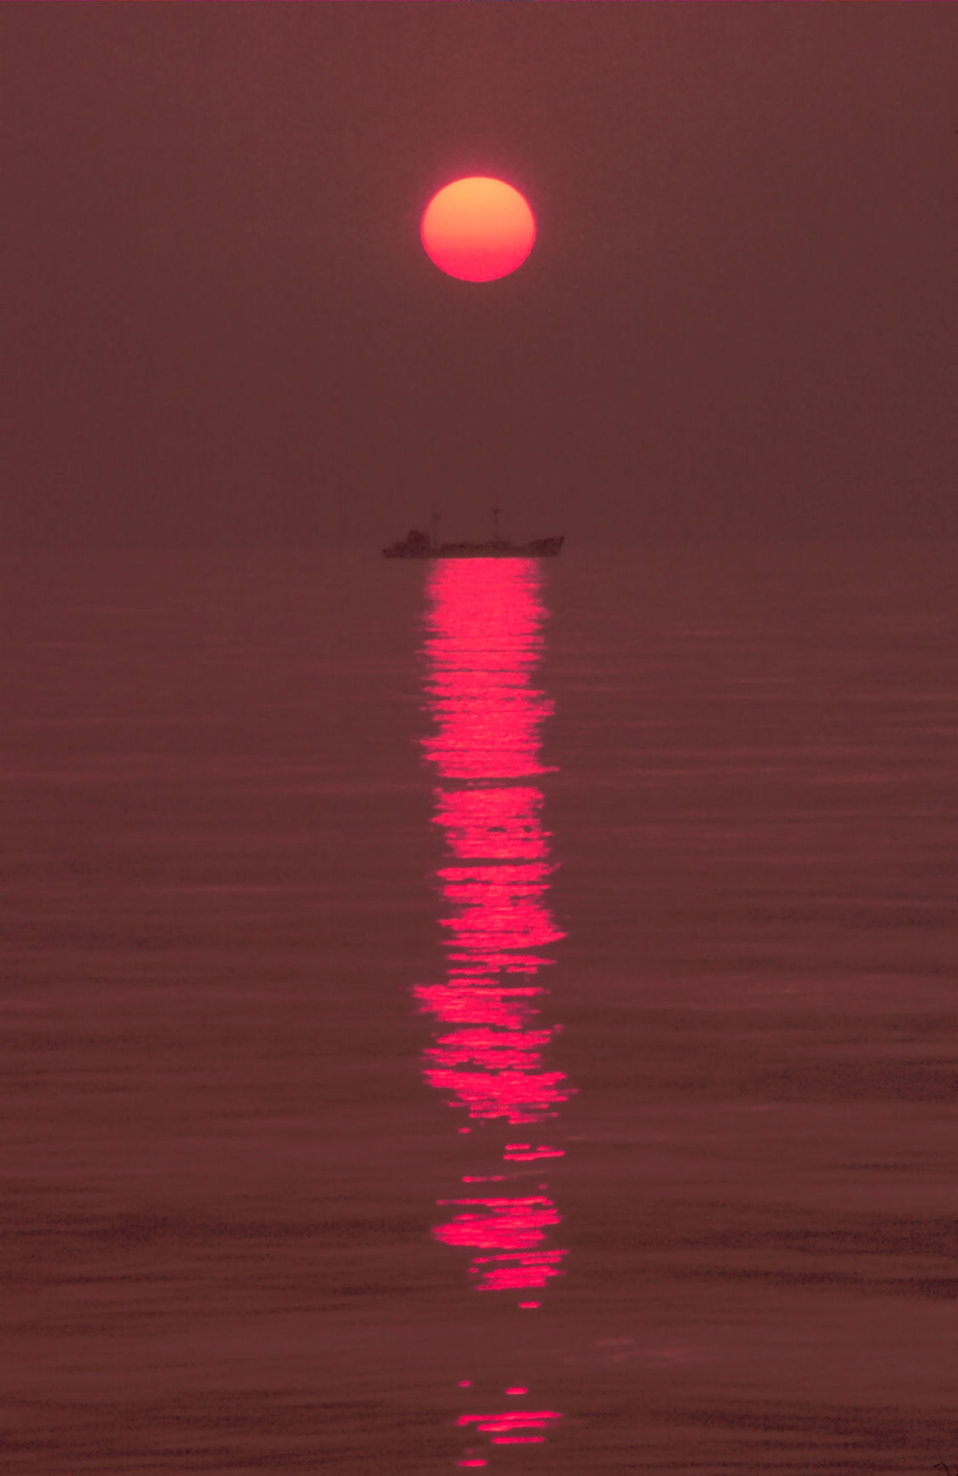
A small coastal freighter plying its way through a placid sea at sunset.